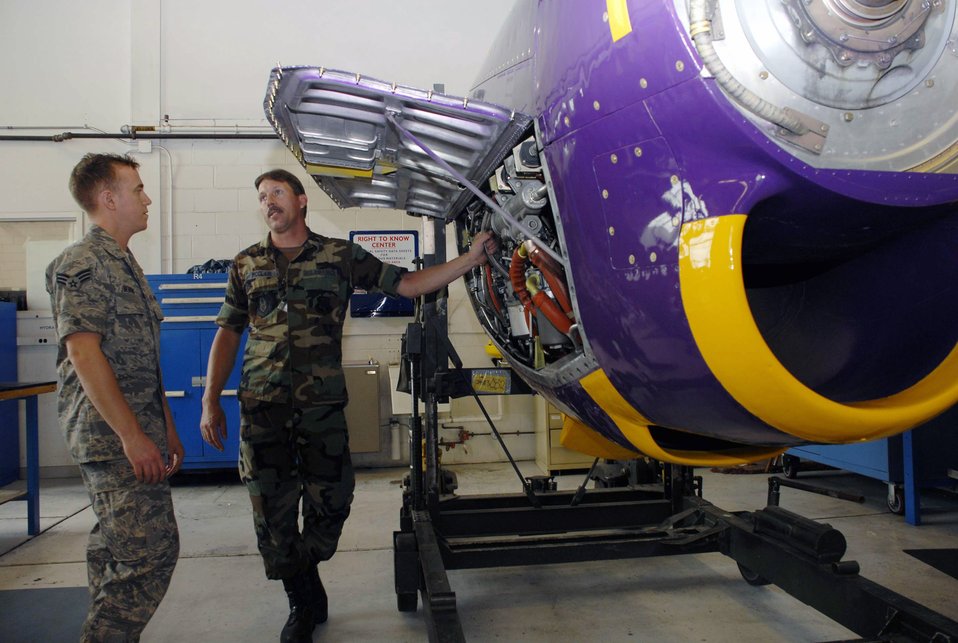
Airmen give dead engine new life

Tech. Sgt. Dennis McClain (right) points out inspection points on a new training engine to Senior Airman Christopher Berens June 11 at Minneapolis-St. Paul Air Reserve Station, Minn. The C-130 Hercule engine was refurbished to serve as a training tool for maintainers in the Air Force Reserve unit.